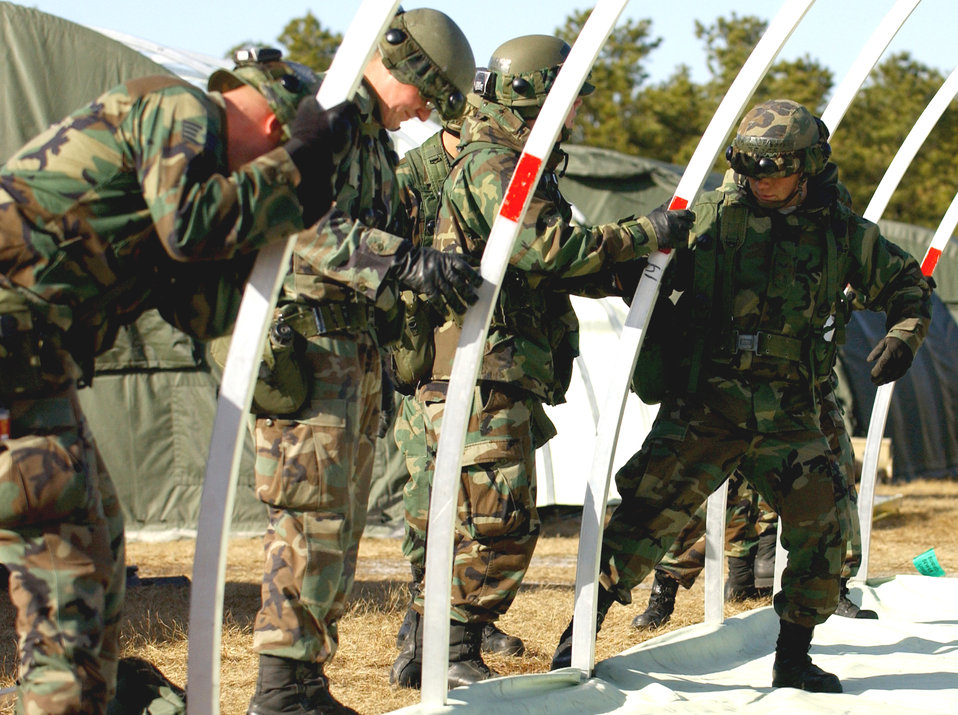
We built this city

LAKEHURST NAVAL AIR STATION, N.J. -- Servicemembers continue to construct tent city during Eagle Flag here Feb. 22. Eagle Flag is a 12-day field training exercise involving more than 400 participants aligned with air expeditionary force rotations to provide training for combat support forces. The training provides instruction on opening the air base, maintaining command and control structure and the generation of mission capable forces. The exercise will integrate Air Force expeditionary specialties into one military operation striving toward a single mission.